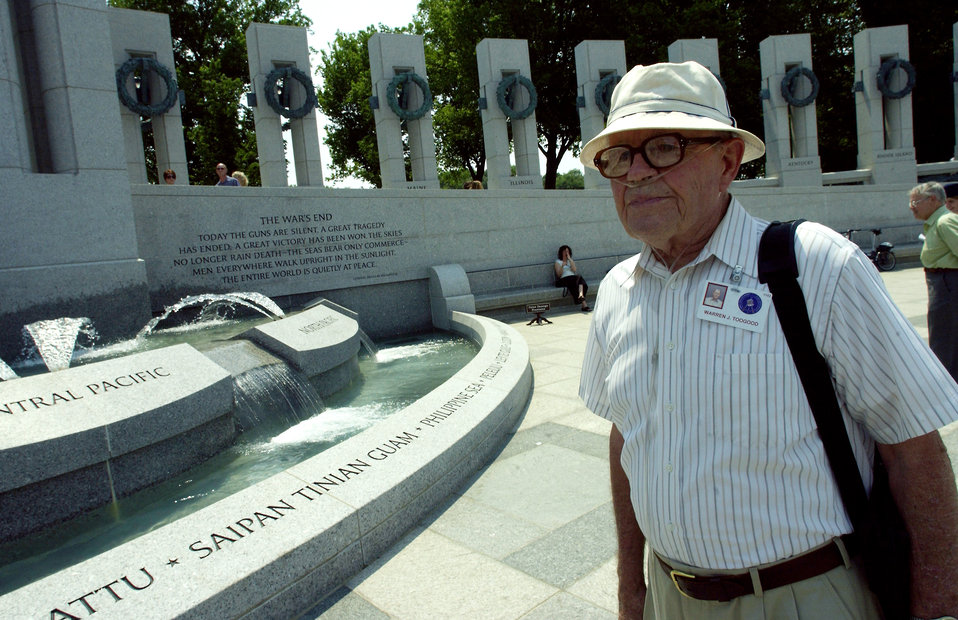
World War II Memorial

WASHINGTON -- Retired Chief Master Sgt. Warren J. Toogood, visited the World War II Memorial here May 11. Chief Toogood was a supply specialist in the Pacific during World War II, and he retired from the Air Force after a 24-year career. The memorial is nestled between the Lincoln Memorial and Washington Monument on the National Mall. It will be officially dedicated Memorial Day weekend.